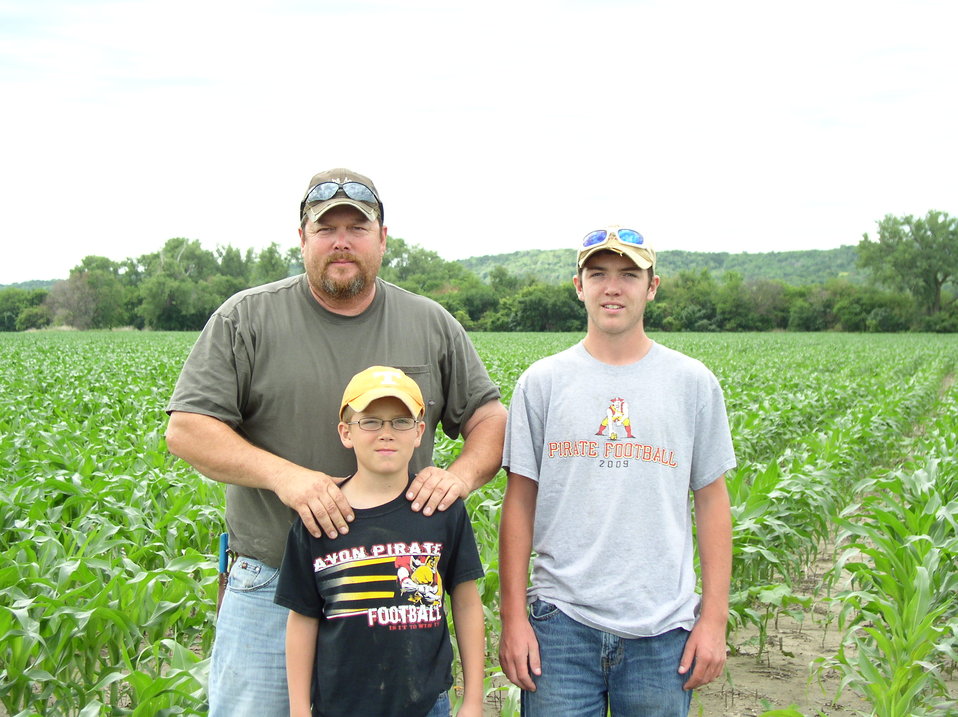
P6270014 Joe and Cole Carter

Joe Fillaus and sons, Cole and Carter, stand in front of their June 2013 corn crop after restoration was made to their field. The Missouri River flooding of 2011 left Fillaus’s farm in Charles Mix County, SD covered with one to six feet of sand debris. The U.S. Department of Agriculture’s (USDA) Farm Service Agency (FSA) Emergency Conservation Program (ECP) provided emergency funding and technical assistance to Fillaus to rehabilitate his farmland damaged by the flood.